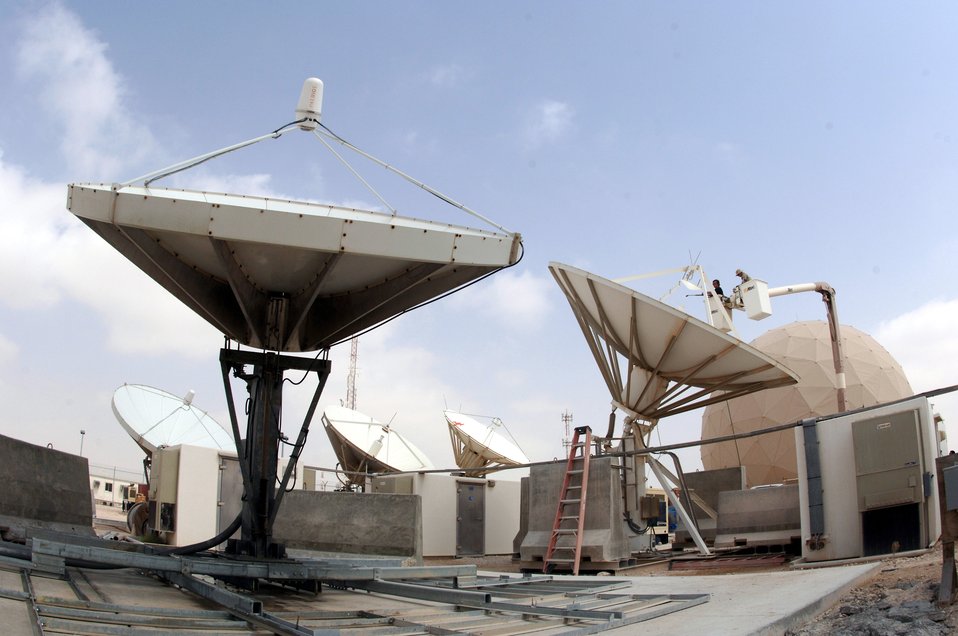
It's a wash

Matt Rogers power-washes satellite dishes at a deployed location in Southwest Asia on Sunday, March 19, 2006, with a lift from the 379th Expeditionary Civil Engineer Squadron. The satellites provide communication capabilities to forward-deployed units. Mr. Rogers is a civilian contractor.